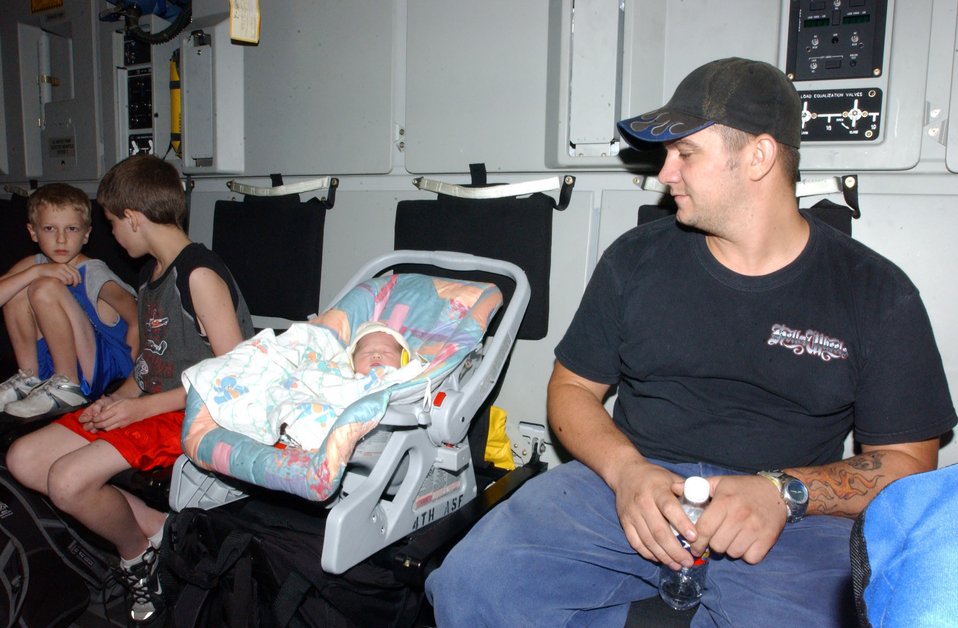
Hurricane Katrina medical evacuations

LACKLAND AIR FORCE BASE, Texas -- Airman Aaron Post and his family wait to leave a C-17 Globemaster III here after being evacuated from Keesler Air Force Base, Miss., in the wake of Hurricane Katrina on Aug. 30. Airman Post's wife gave birth to their daughter during the hurricane without any power in the hospital at Keesler. He is assigned to 81st Transportation Squadron.